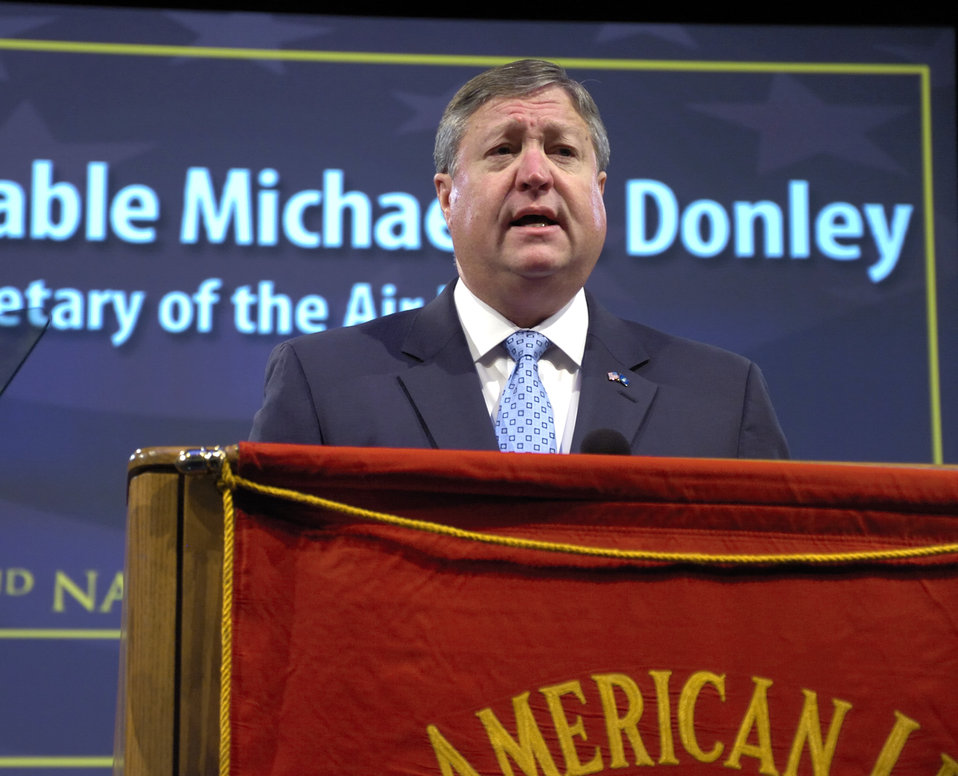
American Legion’s 92nd National Convention

Secretary of the Air Force Michael Donley addresses Legion delegates Sept. 1, 2010, during the American Legion’s 92nd National Convention in Milwaukee, Wis.